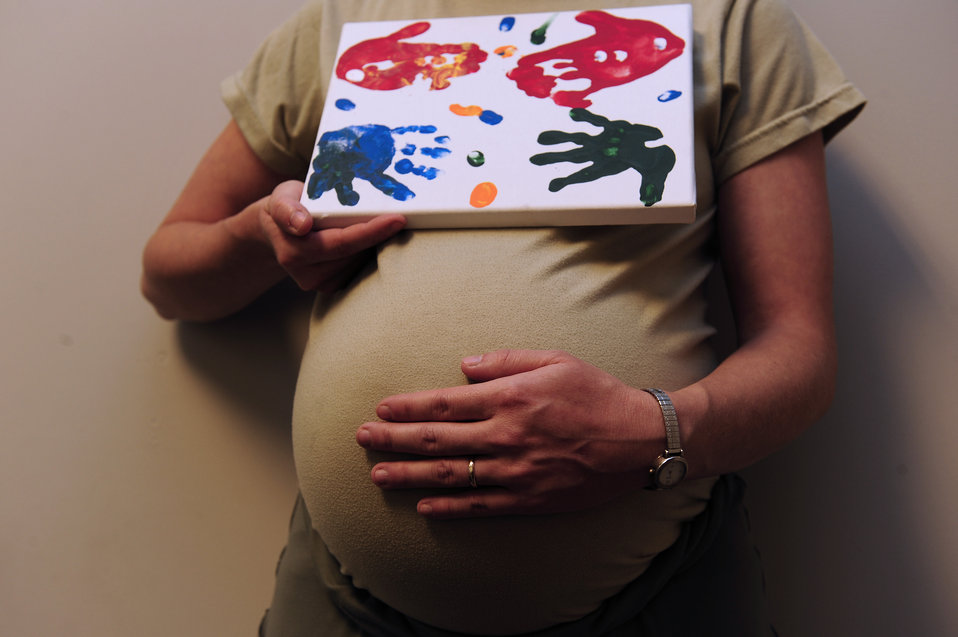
A mother's hands

Staff Sgt. Shelby Bird poses with a work of art from her two children Tiernan and Riordan, presented to her on Mother’s Day, while she also holds the life of her unborn child, at Shaw Air Force Base, S.C., Oct. 22, 2012. Bird is the 20th Force Support Squadron Airman Leadership School instructor.